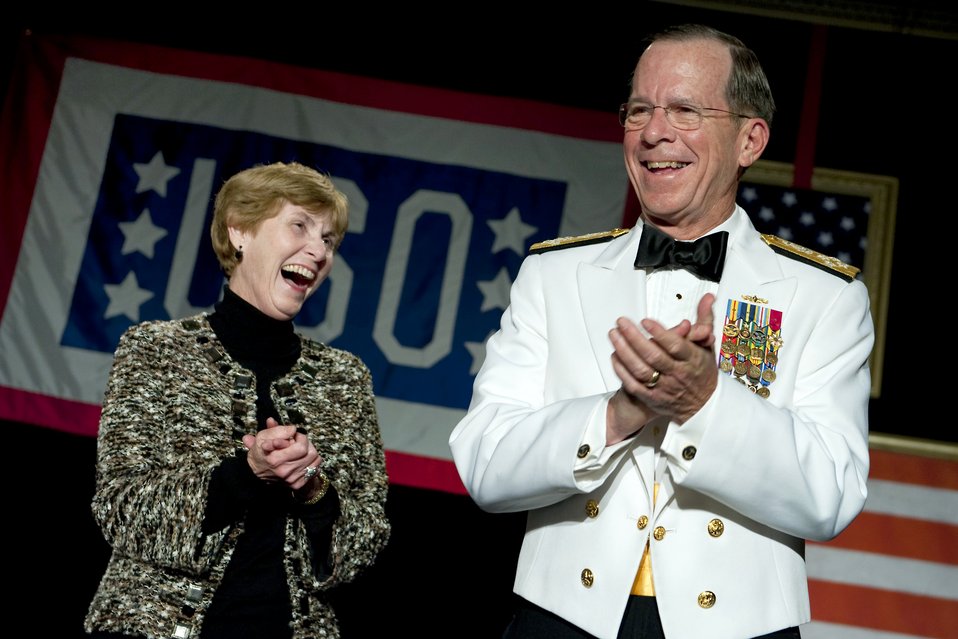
USO recognized for service to military

Navy Adm. Mike Mullen, chairman of the Joint Chiefs of Staff, and his wife, Deborah, share a laugh during the 2011 USO Metro Awards Dinner in Washington April 12, 2011.